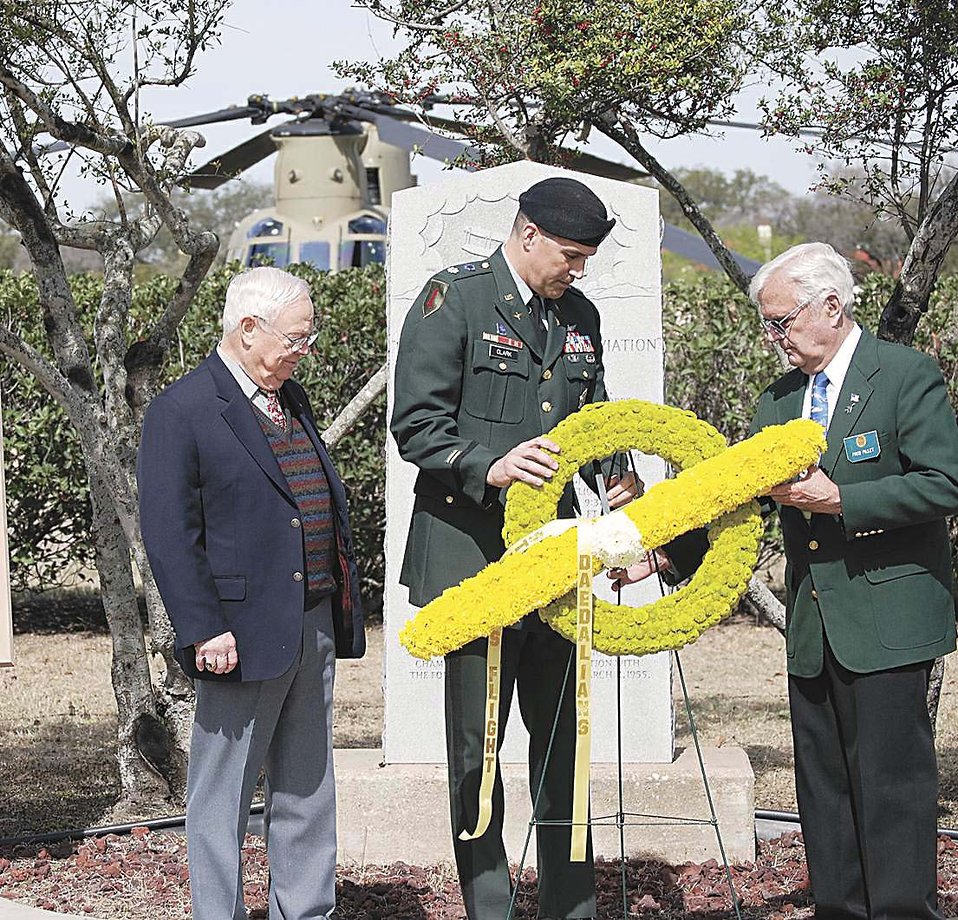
Post commemorates 99th anniversary of first military flight

Keith Ferris (left to right), Lt. Col. Daniel Clark,and retired Col. Frederick Pillet place a wreath at the Foulois marker commemorating 99 years of the first military flight made by then 1st Lt. Benjamin Foulois. Mr. Ferris is an aviation artist, Colonel Clark is assigned to U.S. Army North, and Colonel Pillet is the acting flight Captain, Stinson Flight No. 2.